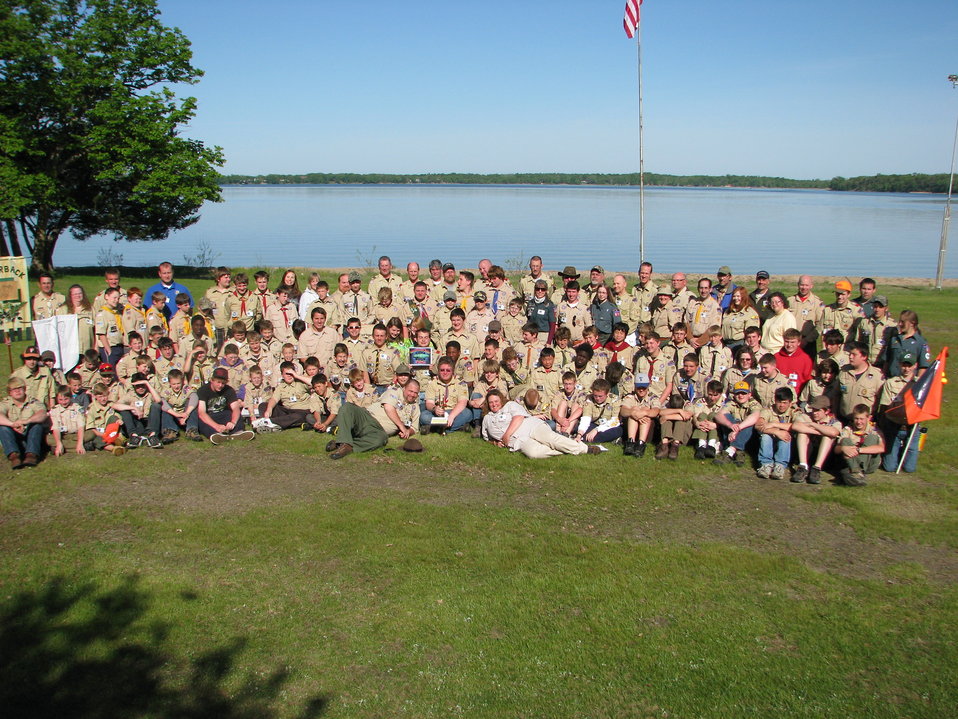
All Together Now!

Boy Scouts from across the Midwest celebrate their success removing invasive species and testing the pilot invasive species merit badge.